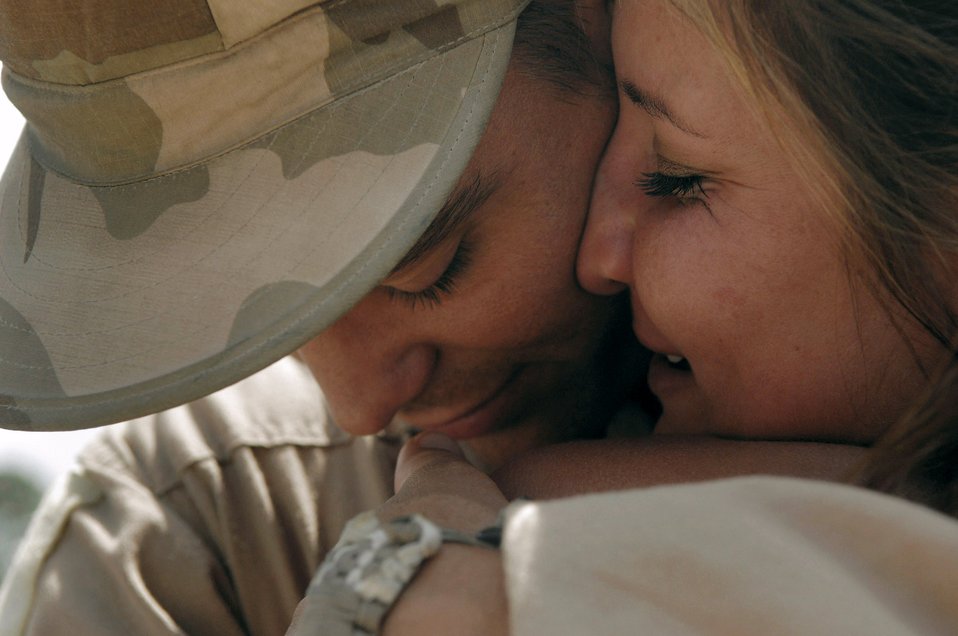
I missed you

An Airman from the 823rd Security Forces Squadron hugs a loved one after returning from a deployment April 29 at Moody Air Force Base, Ga. Members of the 823rd SFS recently returned from a six-month deployment to Iraq.